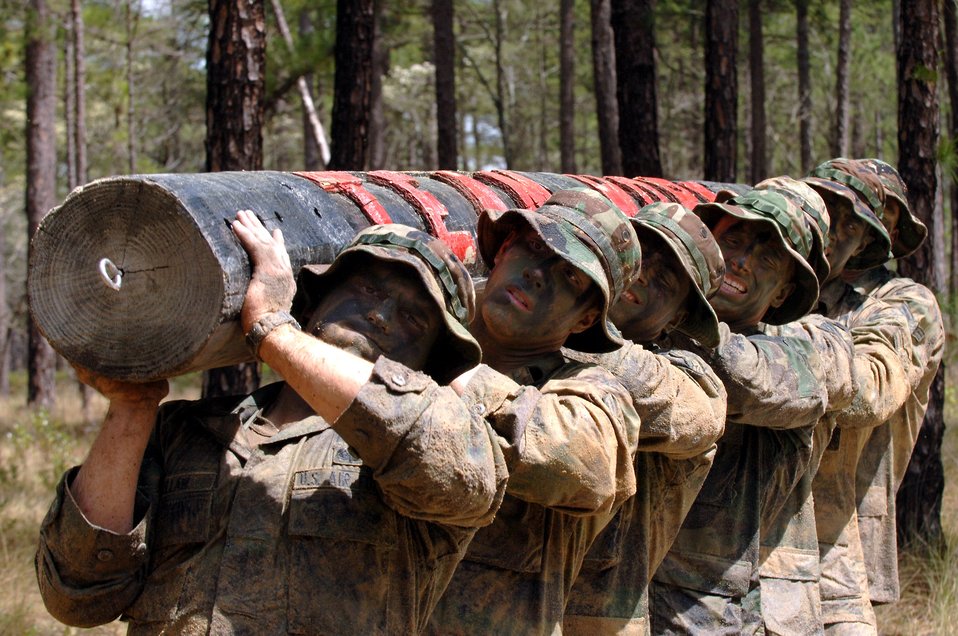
Heave-ho!

Combat control students maneuver the